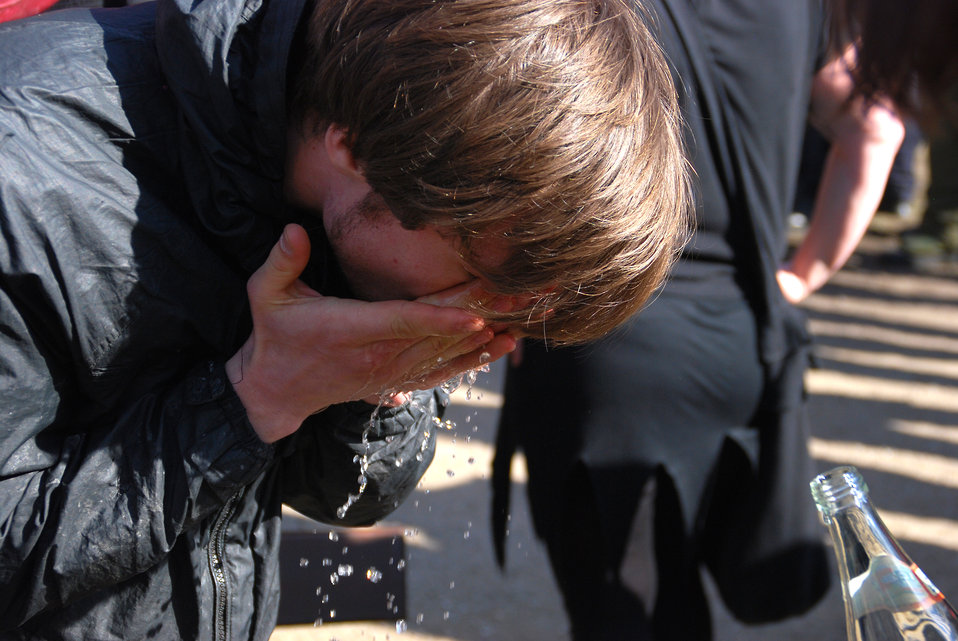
Proteste gegen den Nazi-Aufmarsch am 24.3.2012 in Frankfurt (Oder)